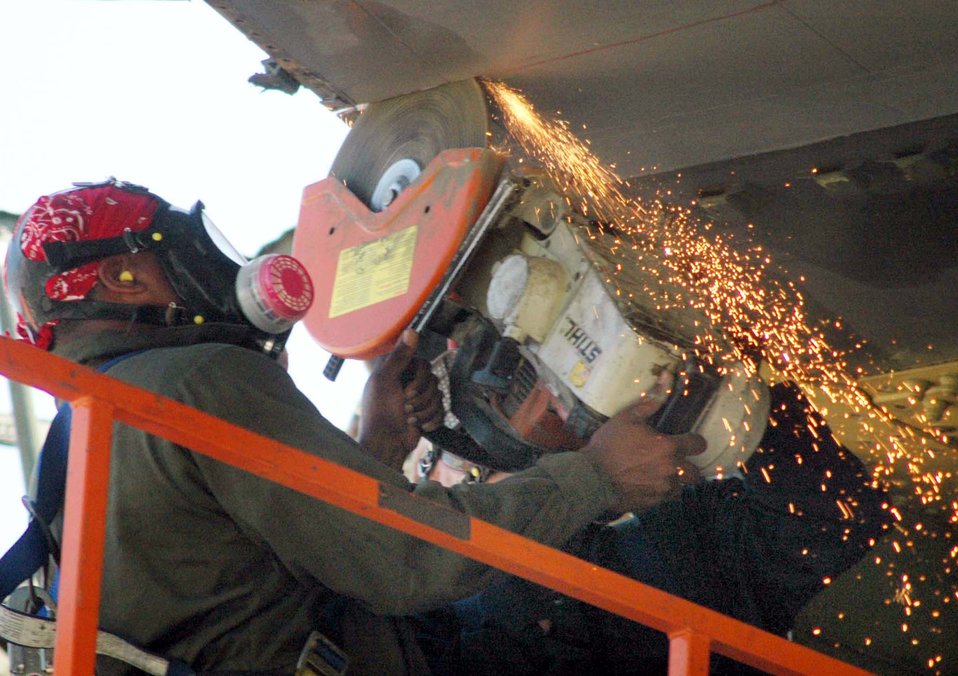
C-5A Galaxy project

ROBINS AIR FORCE BASE, Ga. (AFPN) -- Senior Airman Aaron Cooper saws through the wing of a C-5A Galaxy as part of an engineering structural analysis project. Airman Cooper is assigned to the base's 653rd Combat Logistics Support Squadron.